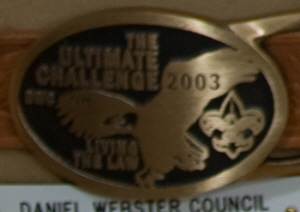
Photograph of 2003 Max I. Silber buckle